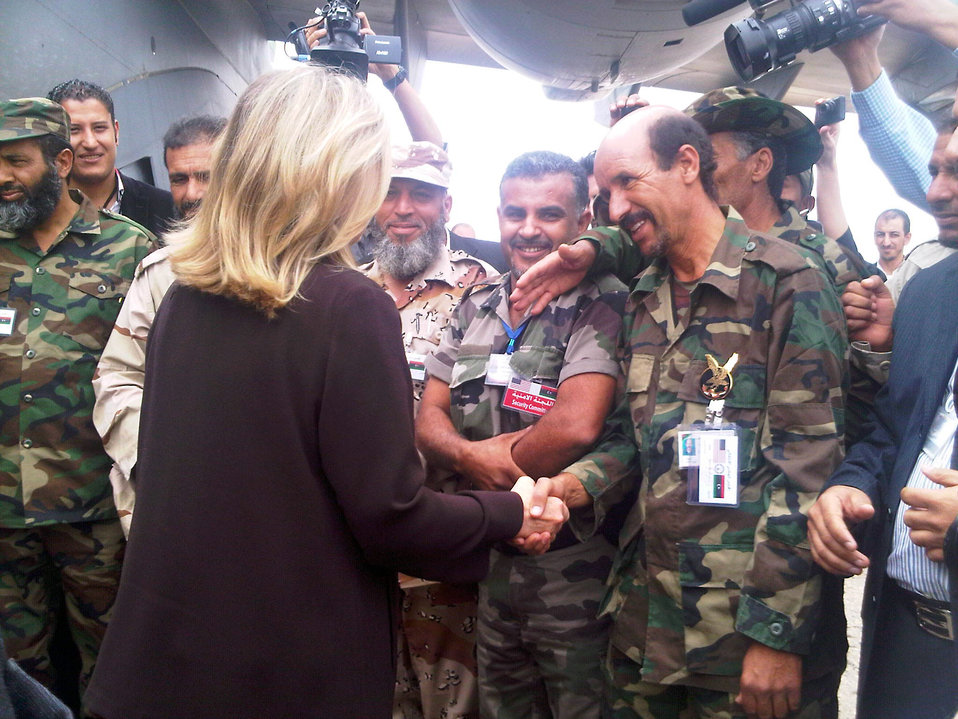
Secretary Clinton Is Greeted By Libyans

U.S. Secretary of State Hillary Rodham is greeted by Libyans upon arrival at Tripoli International Airport in Libya on October 18, 2011.